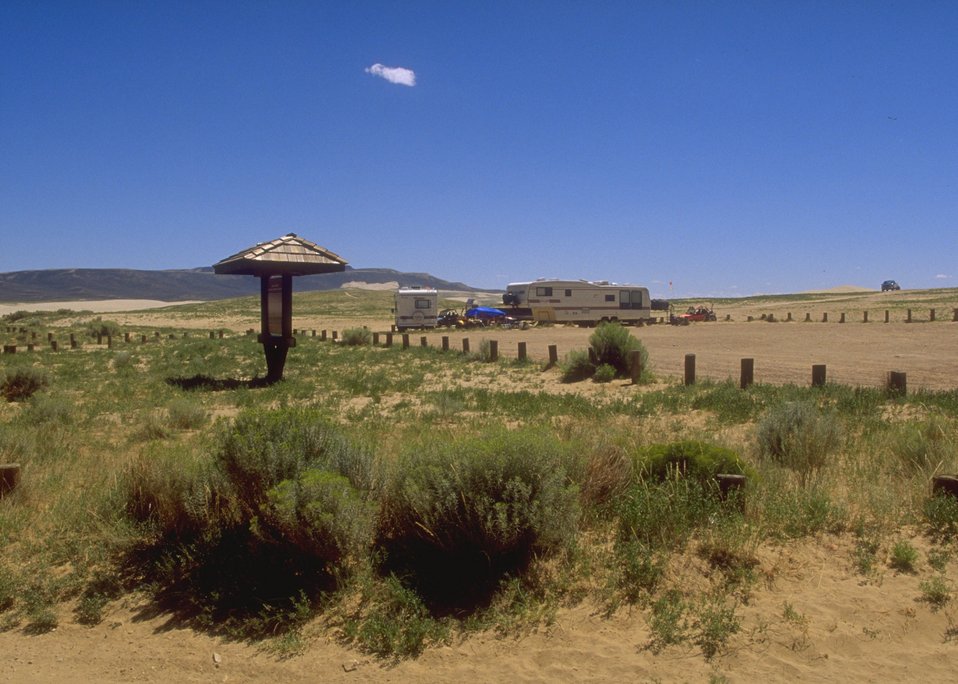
Facility development at Sand Dunes OHV Area, Rock Springs Field Office.